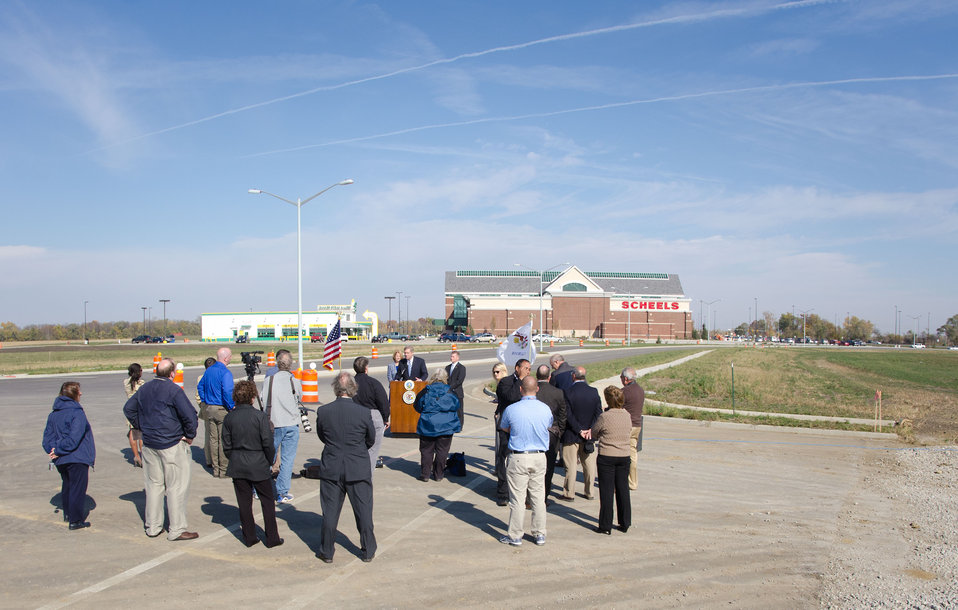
U.S. Department of Agriculture Secretary Tom Vilsack (at podium), Illinois Department of Transportation Acting Secretary of Transportation Ann Schneider (center) and Sangamon County Recorder of Deeds (left) visited a recently completed transportation project that extended the existing MacArthur Boulevard and new interchange with Interstate 72, that brought new businesses and 500 new jobs to Springfield, IL on November 2, 2011. Agriculture Secretary Tom Vilsack discussed the Administration's strategy to strengthen the U.S. economy and to highlight what passage of the American Jobs Act will mean for Illinois. 'The American Jobs Act provides common-sense steps we can take right now to put more people back to work and put more money in the pockets of working Americans, without adding a dime to the deficit,' said Secretary Vilsack. 'In Illinois, this Act will provide a tax cut for over 260,000 businesses, support the jobs of 14,500 teachers and first responders and immediately provide a job for over 20,700 construction workers through infrastructure improvements. A typical household in Illinois will receive a tax cut of around $1,640.'